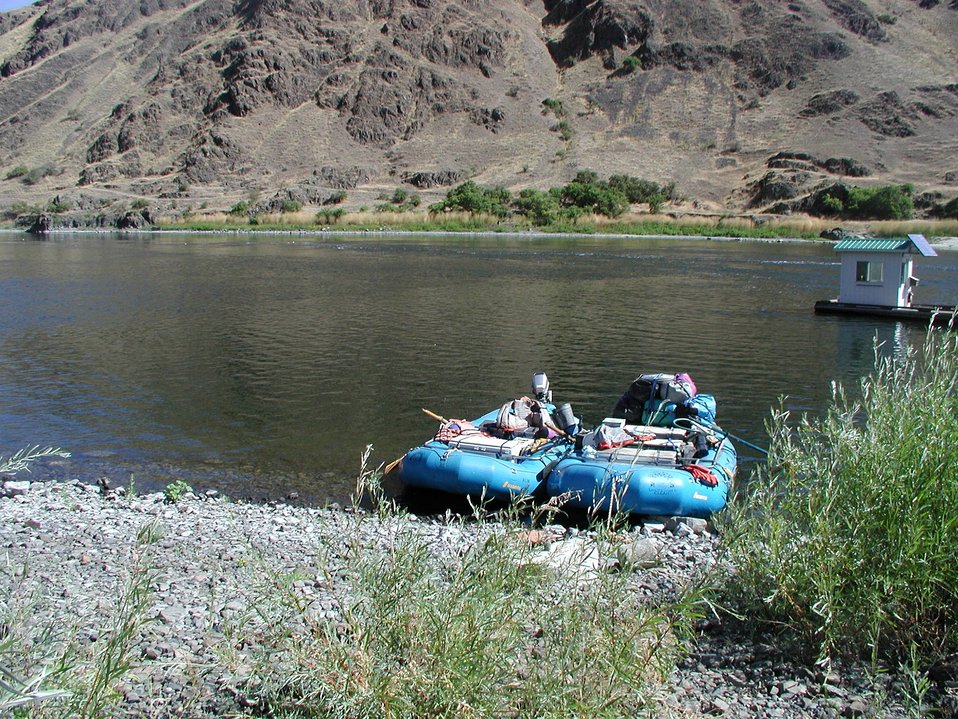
Recreation Rafting on Lower Salmon River Cottonwood Field Office UCSC Upper Columbia Salmon Clearwater District